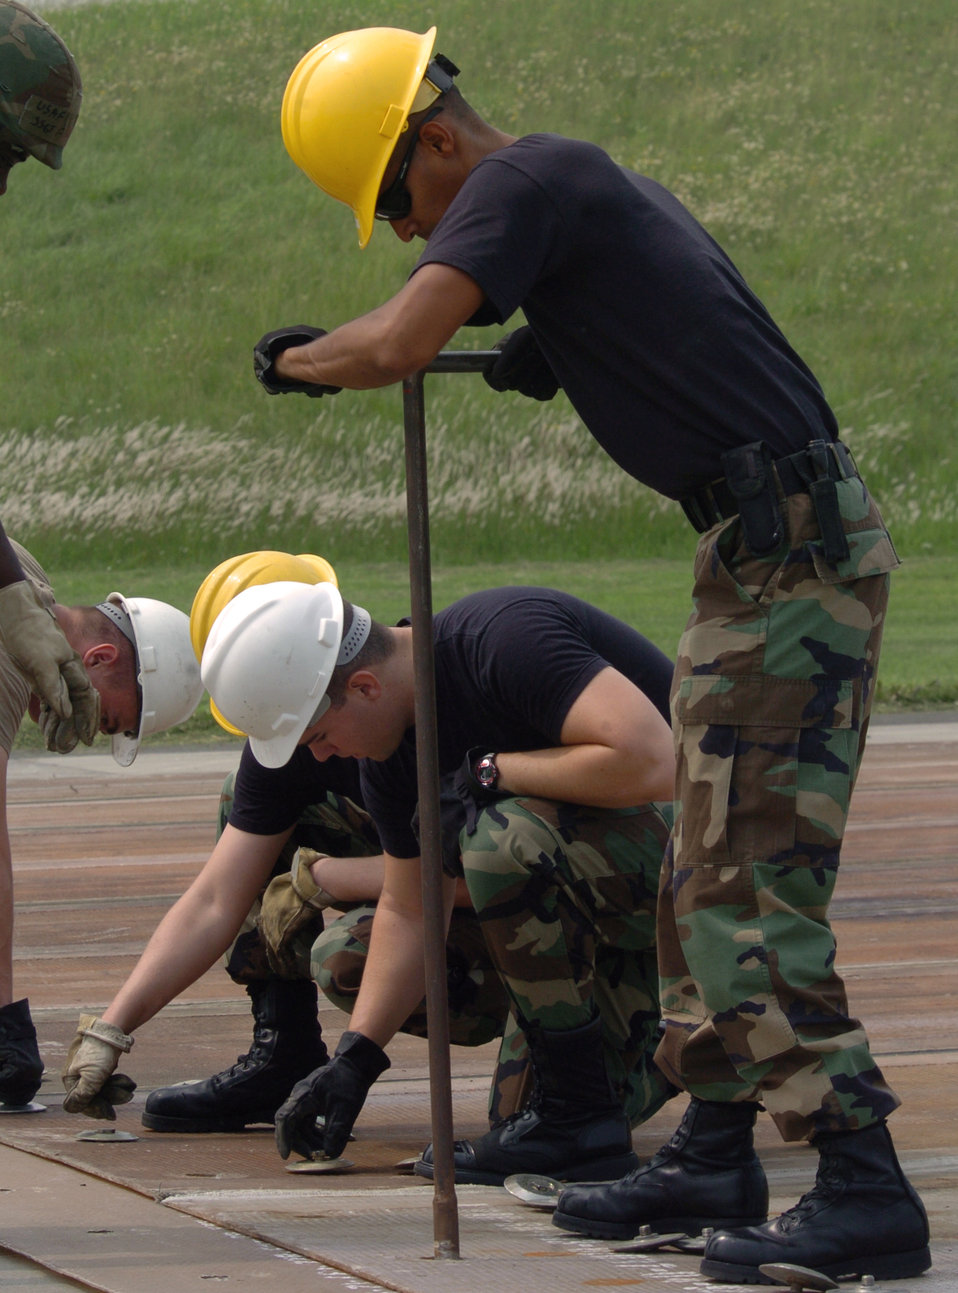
Running fiber

YOKOTA AIR BASE, Japan -- Staff Sgt. Orlando Crespo (standing) helps secure a fiberglass mat during airfield damage repair training at the flightline here. During the training, 374th Civil Engineer Squadron Airmen simulated drilling holes into the runway to secure the mats. The mats provide a protective surface for aircraft landing in austere locations. The Airmen are trained to deploy into bare-base locations, assess airfield capabilities, prepare aircraft landing areas, clear obstacles, install emergency airfield lighting systems and repair airfield damage.